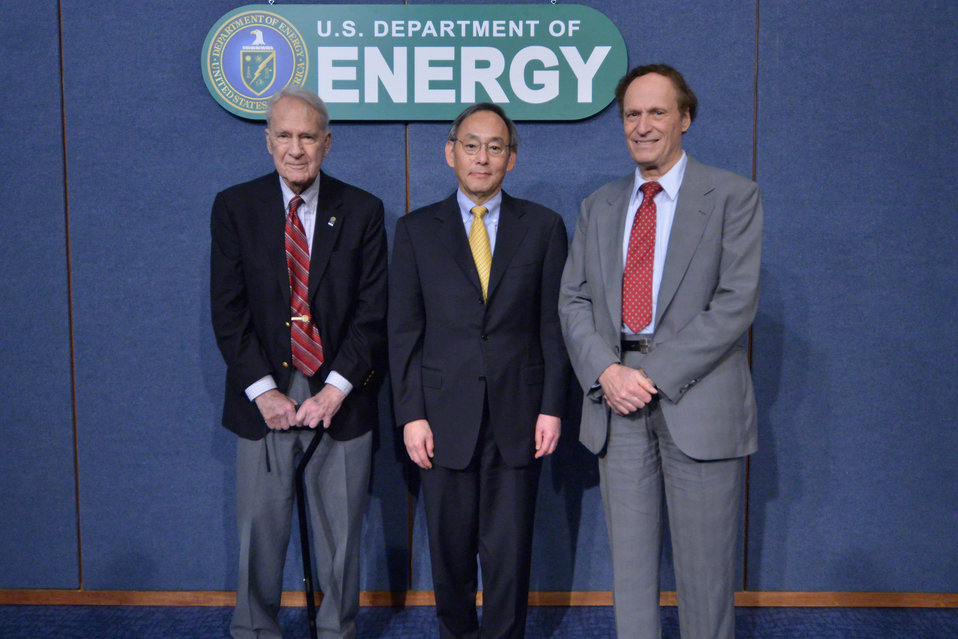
1 NE

Charter employees from the Office of Nuclear Energy with Secretary Steven Chu, current Secretary of Energy, and Secretary James Schlesinger, first Secretary of Energy.